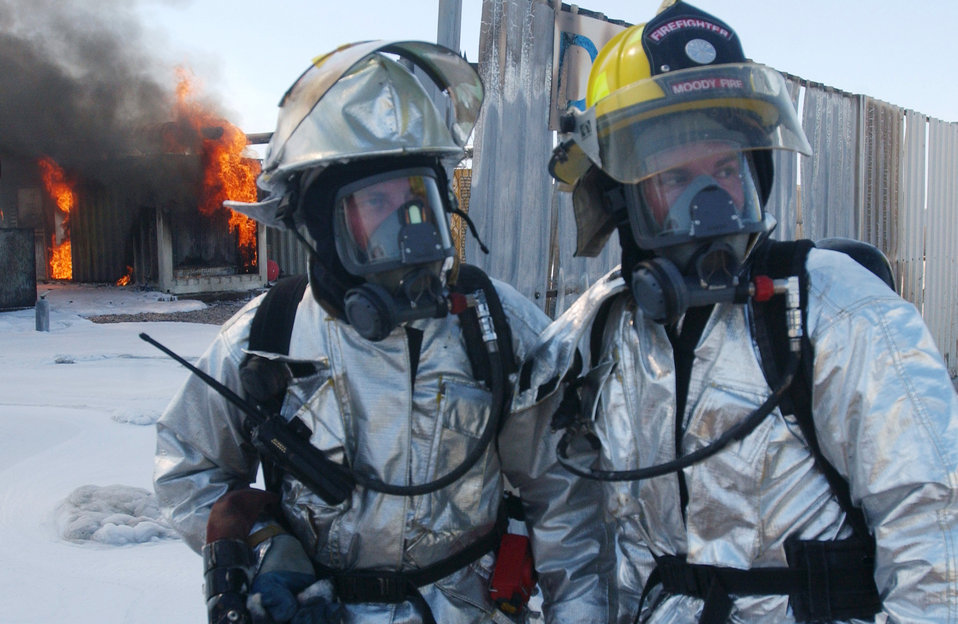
Firefighters tackle blaze

KIRKUK AIR BASE, Iraq -- Airman 1st Class Michael McInnis and Senior Airman William Garrett prepare to battle a fire that erupted near the dining facility here Sept. 14. A fuel truck filling a tank made a spark that triggered the fire. The Airmen are assigned to the 506th Expeditionary Civil Engineer Squadron's fire department.